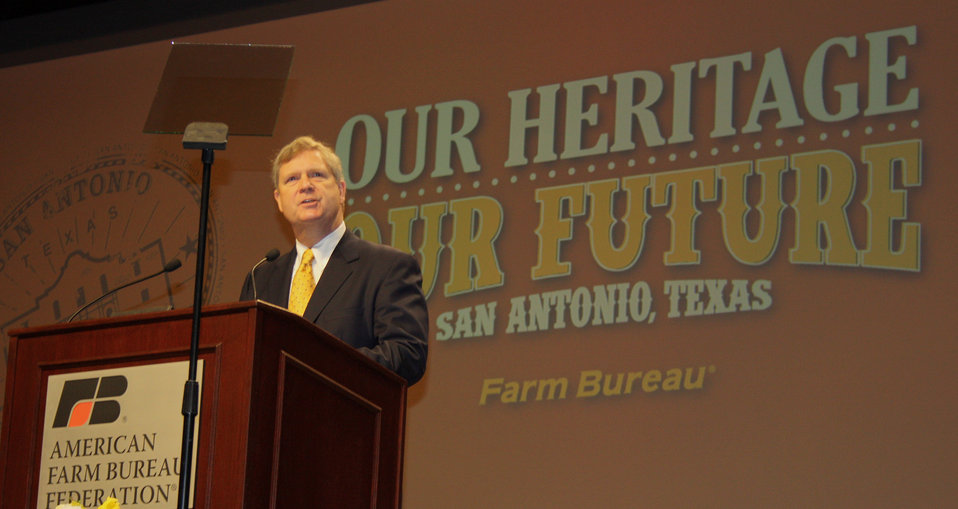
Agriculture Secretary Tom Vilsack speaks to more than 7,000 attendees at the 95th annual American Farm Bureau Federation Convention in San Antonio, TX at the general session on Monday, Jan. 12, 2014.